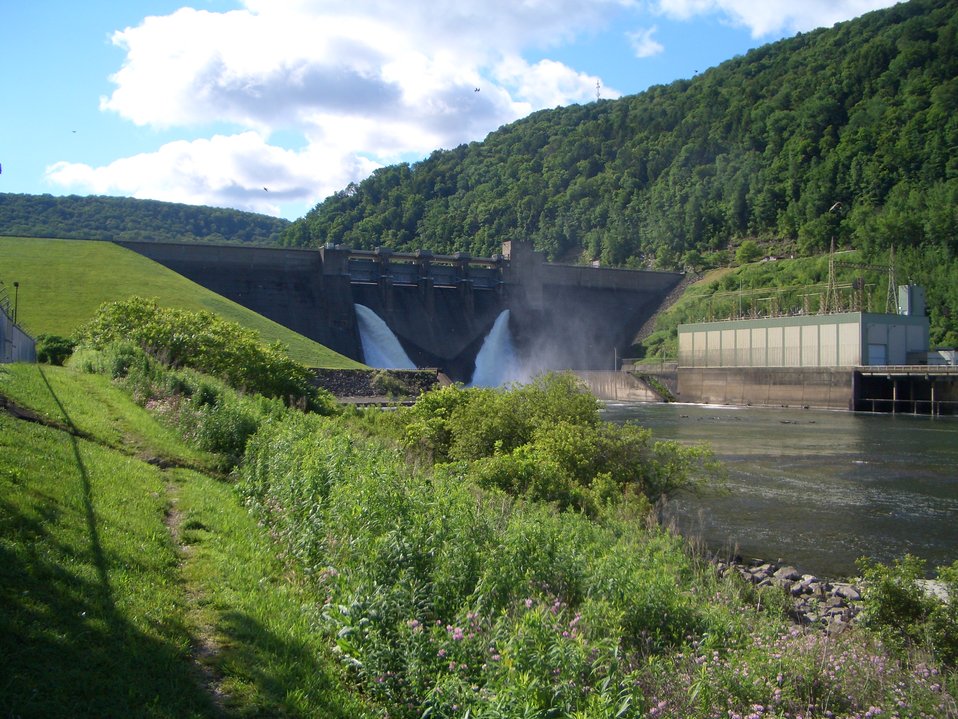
Allegheny National Fish Hatchery

The American Recovery and Reinvestment Act of 2009 provided $1.13 million in funding to complete the repairs at Allegheny National Fish Hatchery. With additional funds from the Service’s Great Lakes Restoration Initiative and hatchery maintenance accounts, the Service in March 2010 awarded a $1.7 million general construction contract to William T. Spaeder Co., Inc., to carry out the project.